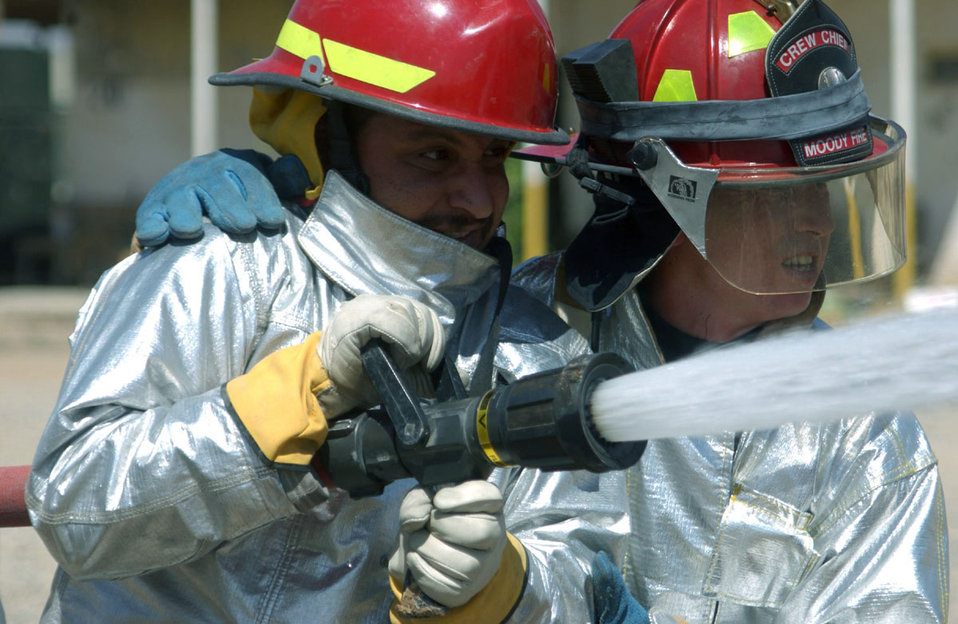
Kirkuk firefighters train Iraqi guards

KIRKUK AIR BASE, Iraq -- Staff Sgt. Shannon Anderson shows an Iraqi firefighter how to attack a fire during a joint training session here. Sergeant Anderson is assigned to the 506th Expeditionary Civil Engineer Squadron's fire department and is from Moody Air Force Base, Ga.